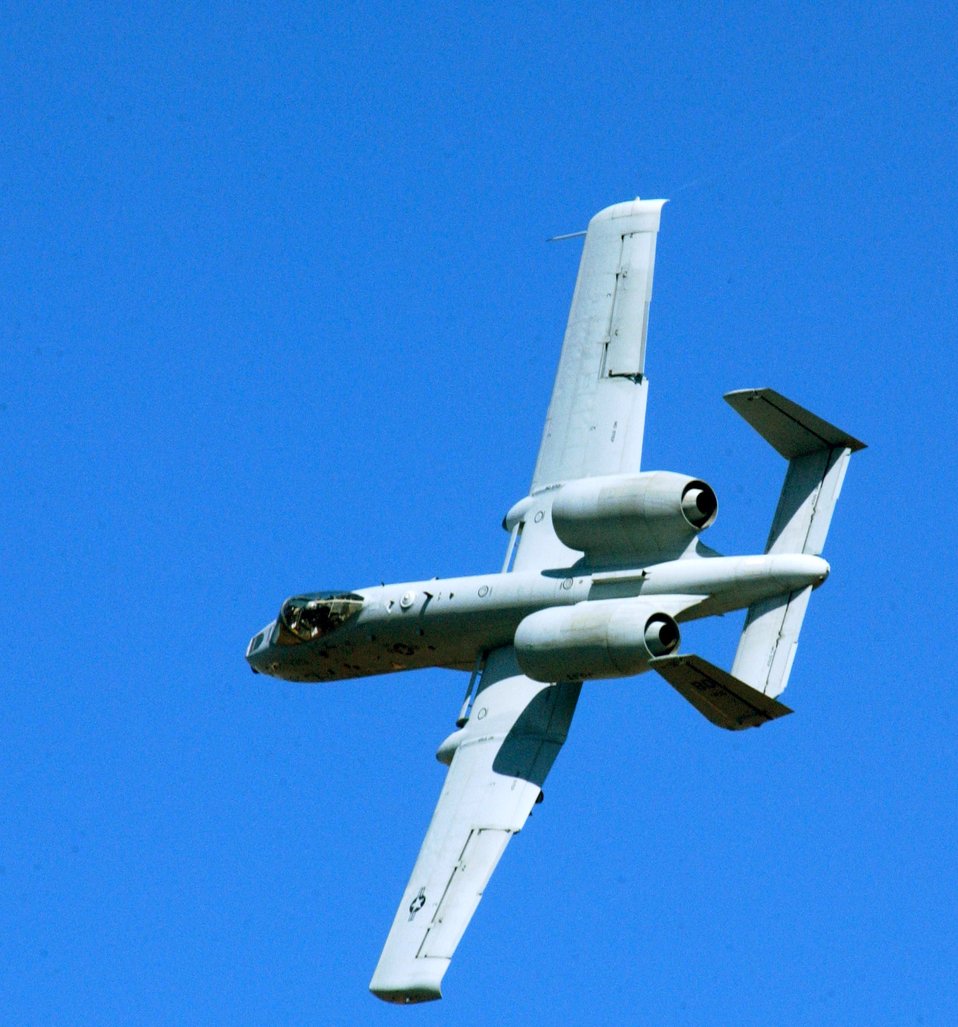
Hawgsmoke 2008

An A-10 Thunderbolt II from the Air Force Reserve Command's 917th Wing at Barksdale Air Force Base, La., turns to engage a target Oct. 16 at the Smoky Hill Range near Salina, Kan. Fourteen A-10 squadrons from across the Air Force are competing in Hawgsmoke 2008 Oct. 14 to 18. Hawgsmoke is a biennial A-10 bombing and aerial gunnery competition, which was hosted this year by the Air Force Reserve Command's 442nd Fighter Wing based at Whiteman Air Force Base, Mo.